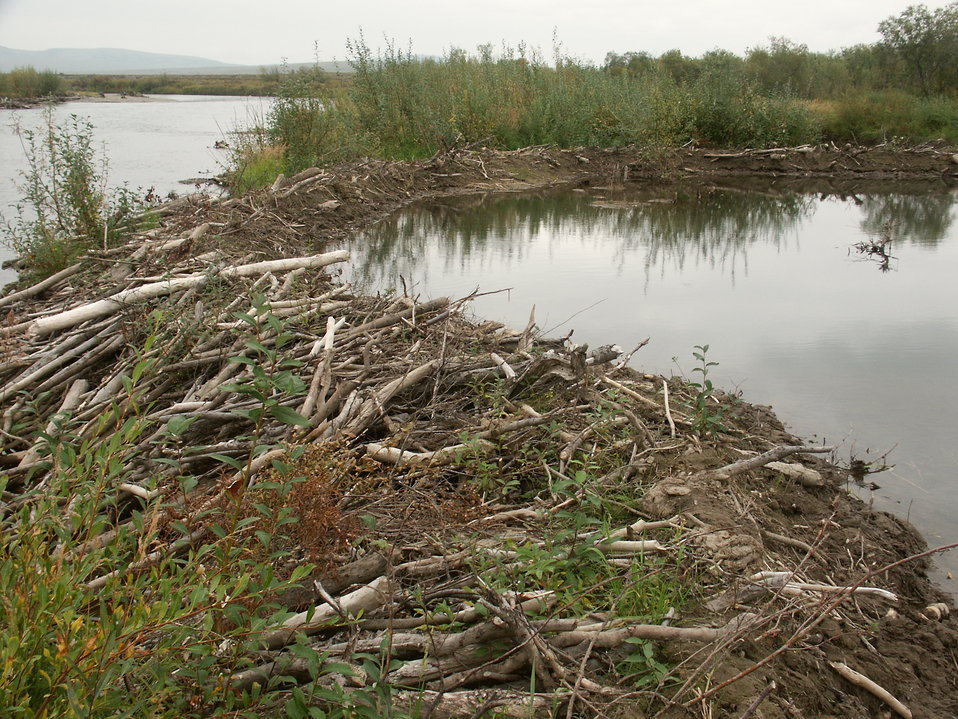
Beaver Dam

USFWS Yukon Delta NWR